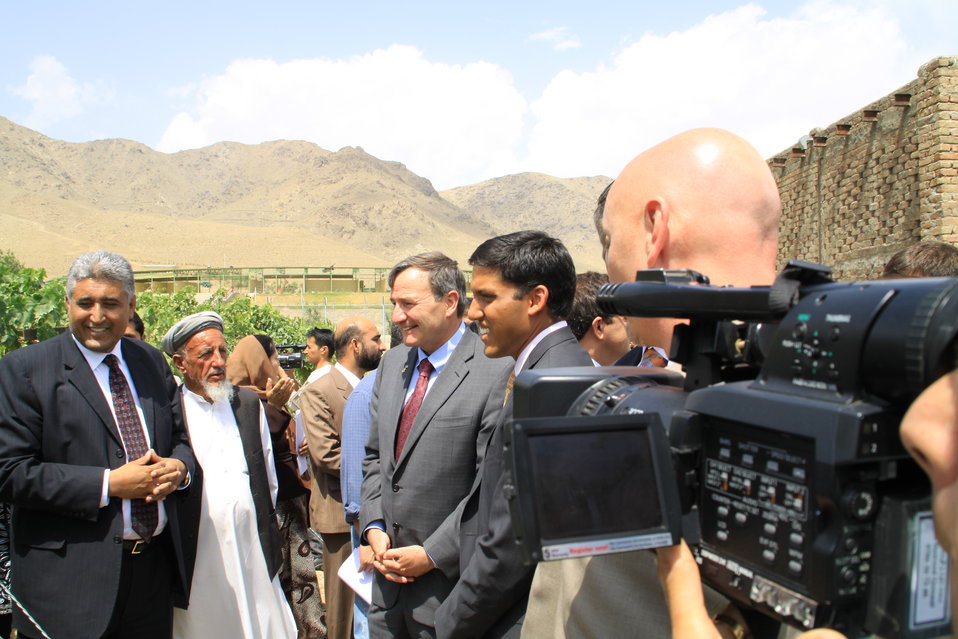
Afghan Farmers Gain More Access to Credit through New $100 Million